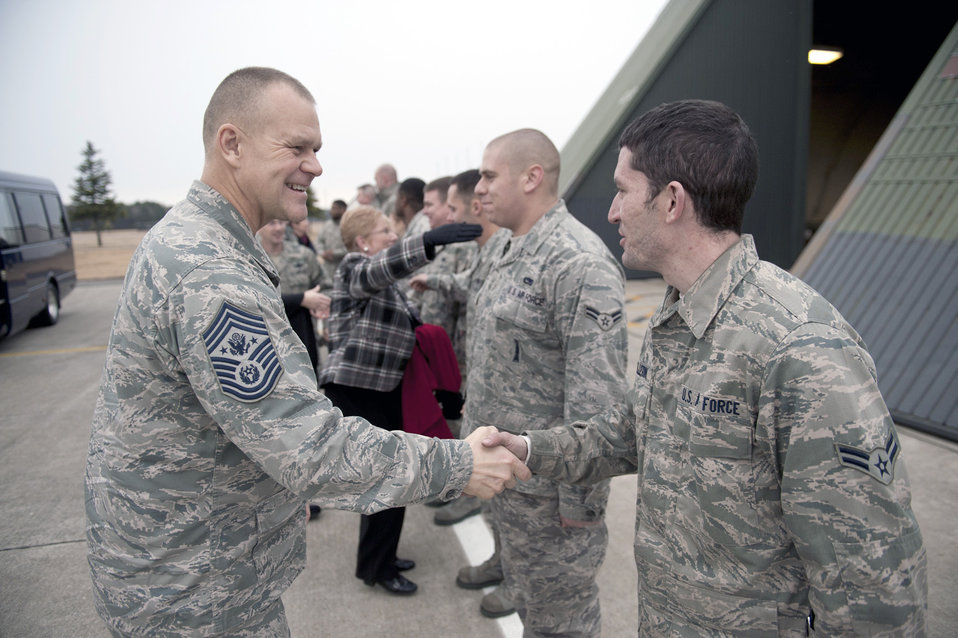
CMSAF visits Misawa

Chief Master Sgt. of the Air Force James A. Roy shakes hands with Airman 1st Class Devin Pellerin Dec. 28, 2010, during a visit to the flightline at Misawa Air Base, Japan. Chief Roy visited a hardened aircraft shelter to meet the maintainers of the 35th Fighter Wing. Airman Pellerin is a 35th Aircraft Maintenance Squadron precision guided munitions crewmember.